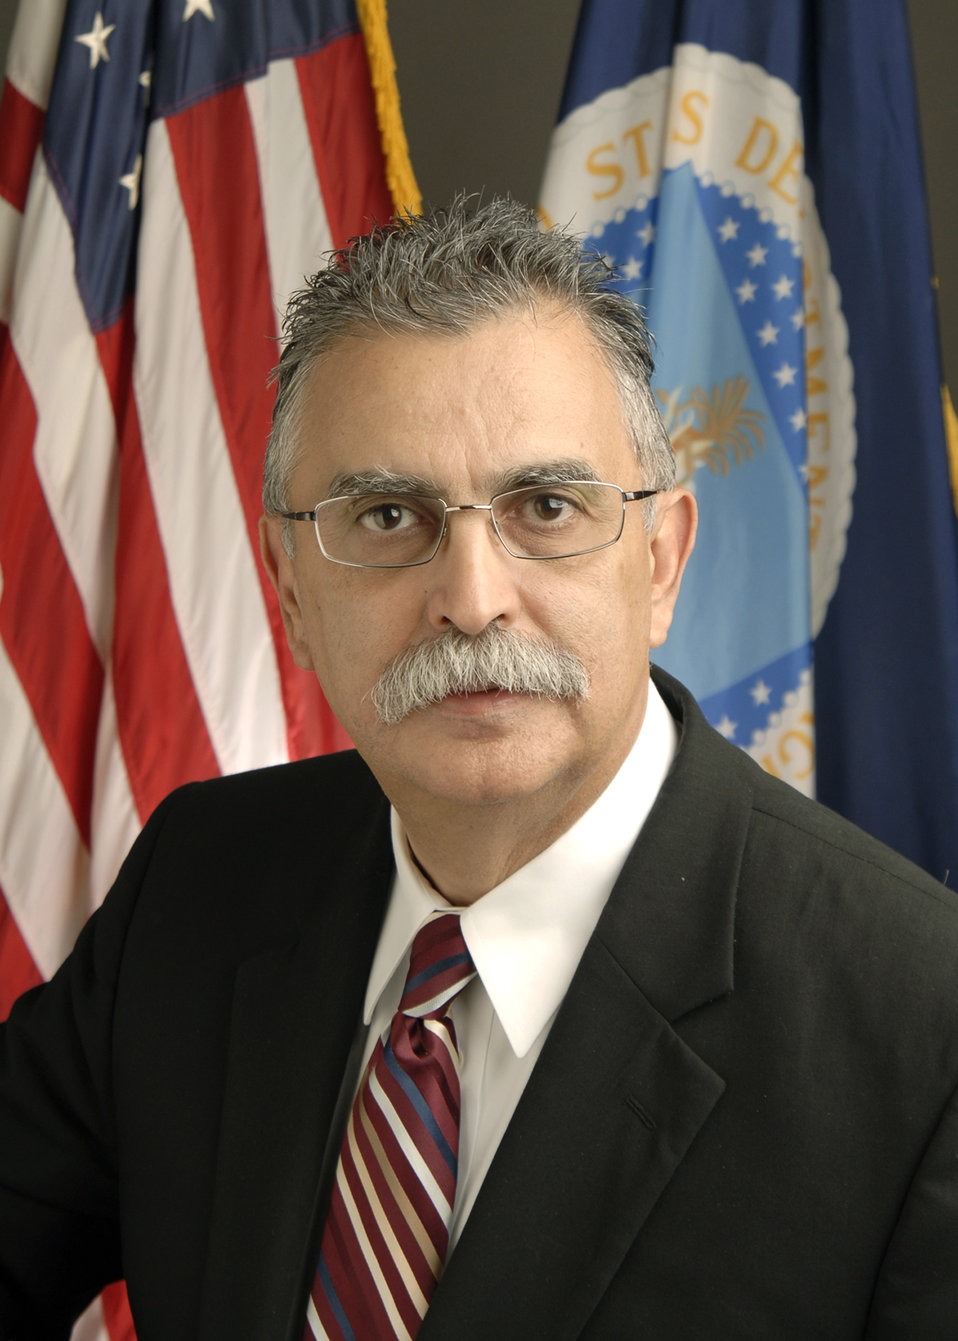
20110609-FSA-KJH-0985 Administrator Farm Service Agency Juan Garcia

Portrait U.S. Department of Agriculture Administrator Farm Service Agency Juan Garcia.